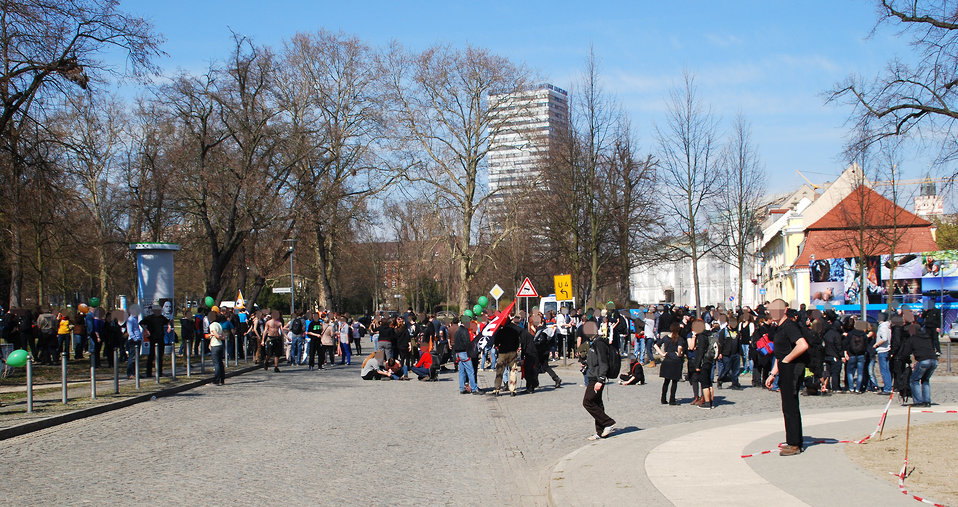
Proteste gegen den Nazi-Aufmarsch am 24.3.2012 in Frankfurt (Oder)